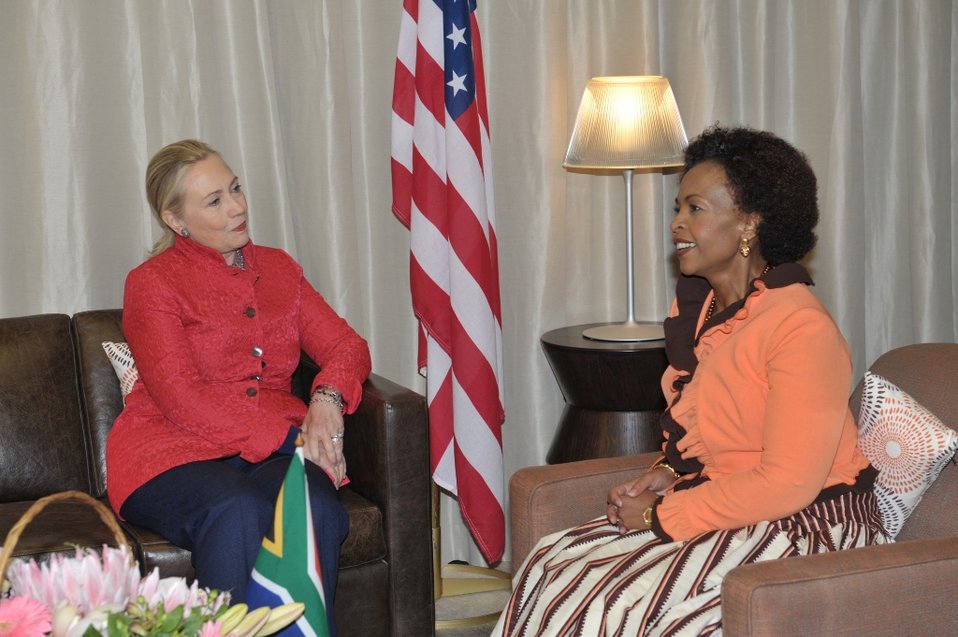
Secretary Clinton Meets With South African International Relations and Cooperation Minister Nkoana-Mashabane

U.S. Secretary of State Hillary Clinton meets with South African International Relations and Cooperation Minister Maite Nkoana-Mashabane for the second meeting of the South Africa-United States of America Strategic Dialogue in Johannesburg, South Africa, on August 7, 2012.